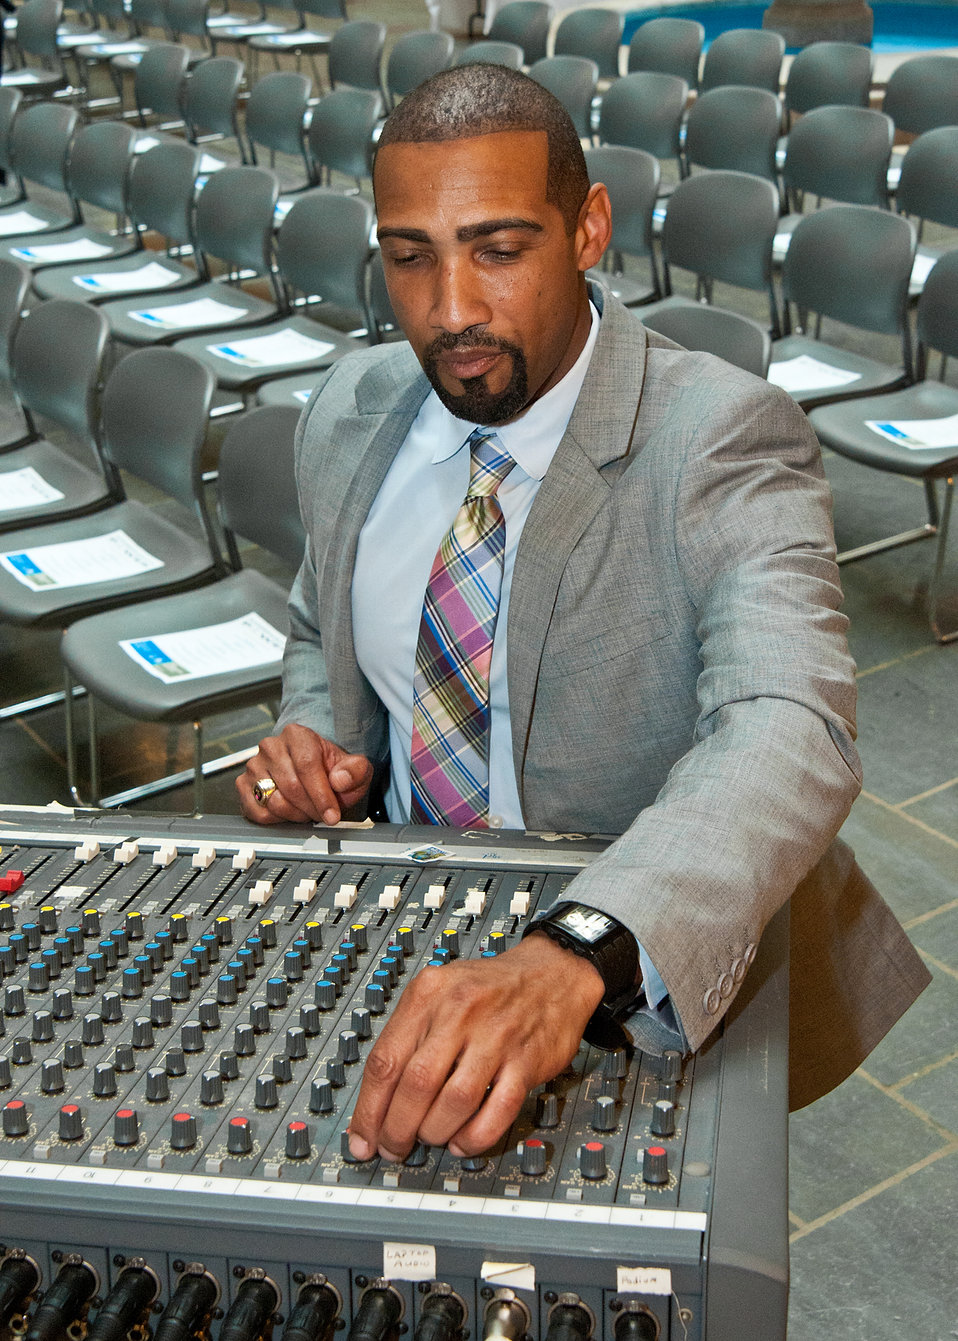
Eric Humphries, Office of Executive Services prepares the audio and video portions of the U.S. Department of Agriculture the kick-off of the USDA 2011 Combined Federal Campaign “Compassion of Individuals, Power of Community” at the USDA in Washington, DC, on Wednesday, September 21, 2011. The theme of the 2011 campaign is “Celebrating 50 Years of Caring, Serving and Giving.”